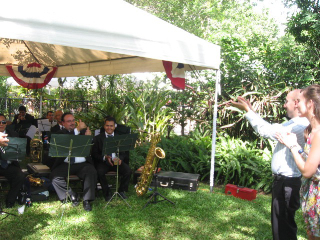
July 4th Celebration at U.S. Embassy in Honduras

New Orleans recording artists Sasha Masakowski and Paul Thibodeaux appreciate La Banda De Los Supremos Poderes at the U.S. Independence Day celebration at the U.S. Ambassador to Honduras’ residence in Tegucigalpa, Honduras, on July 2, 2010.